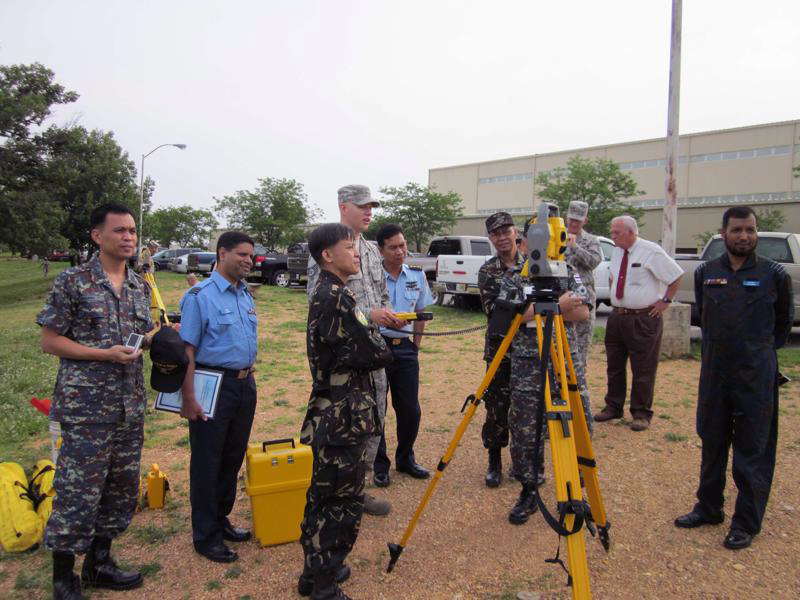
13th AF hosts international engineering exchange summit

Civil Engineers from the Asia-Pacific region participating in a subject matter expert exchange called Pacific Unity watch as an Airman conducts an engineering survey June 4, 2010, at Fort Leonard Wood, Mo. The SMEE is a joint and combined military information sharing forum that provides mid-level officers from regional Asia-Pacific partner nations to exchange views, tour U.S. military facilities and programs, and establish international and interpersonal relationships. The exchange included officers from Bangladesh, Indonesia, the Philippines and Thailand and focused on emergency-management preparation, disaster-response, fire prevention, confined spaces, search and rescue, and general contingency engineering tactics.